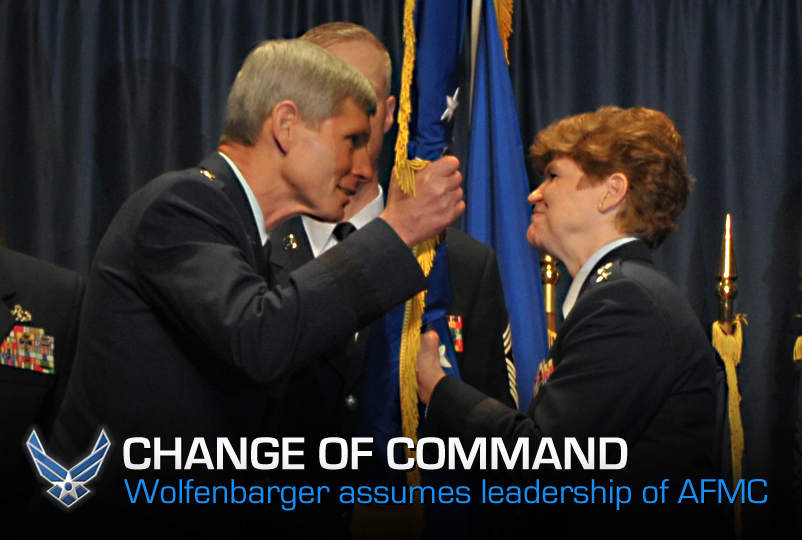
Change of Command